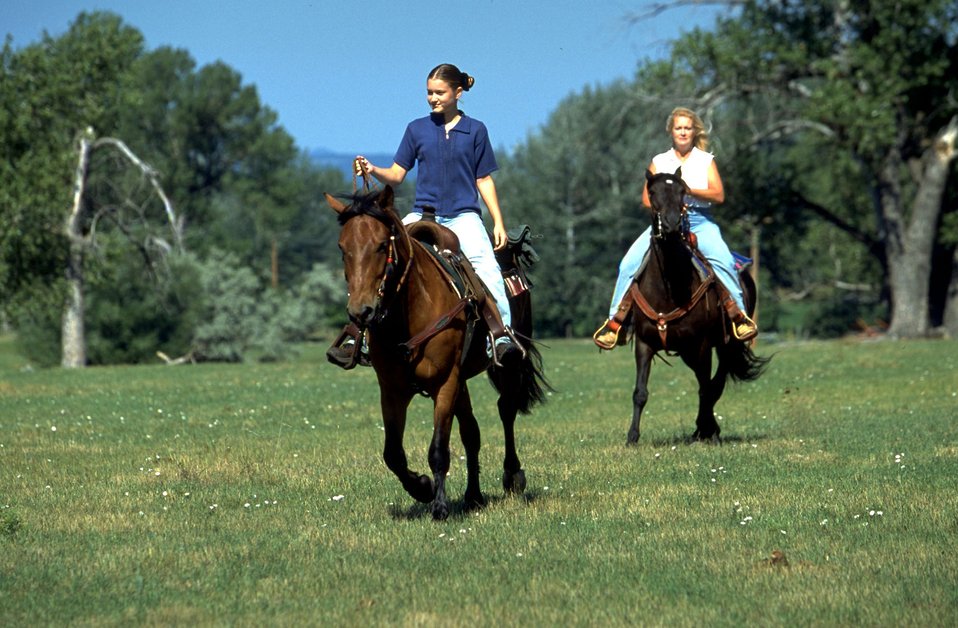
Riding adopted Horses